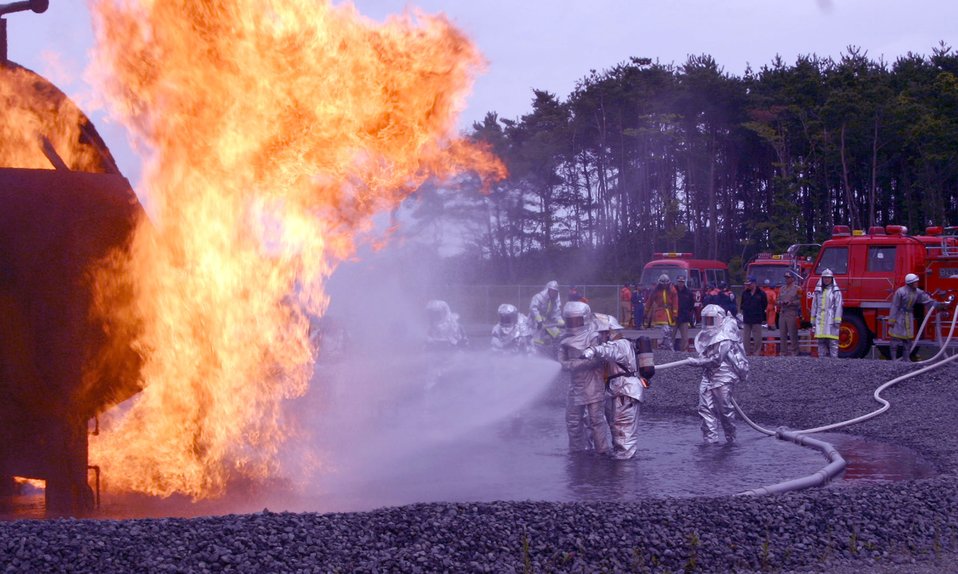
Learning from burning

MISAWA AIR BASE, Japan - More than 80 firefighters from the 35th Civil Engineer Squadron fire department here and fellow firefighters from the local community as well as the Japanese Air Self-Defense Force combined Sept. 26 to practice their trade.